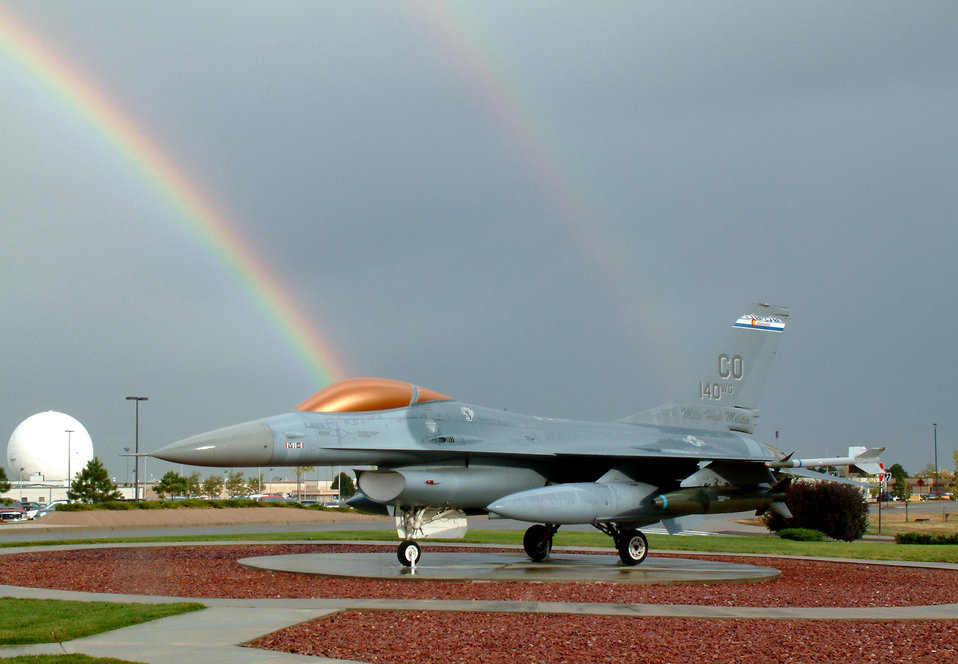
Over the rainbow

BUCKLEY AIR FORCE BASE, Colo. - A rainbow shines on an F-16 Fighting Falcon static display here recently. Colorado's unpredictable weather in one day offered rain, slush, sun and a pot of gold.